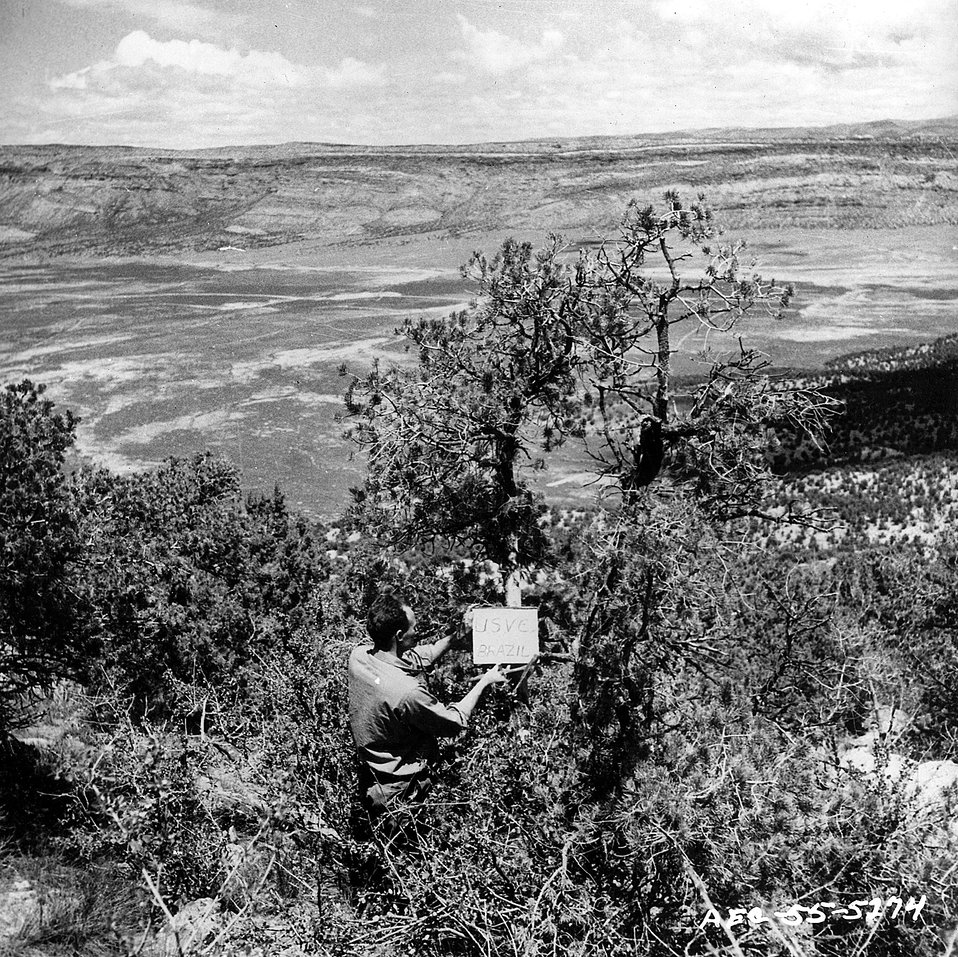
Uranium searcher - Carol Harmon, Casper, Wyoming based field geologist for Kerr-Mc Gee Corporation's minerals exploration department, checks core samples on a site where the company is test-drilling for uranium deposits. c. 1976